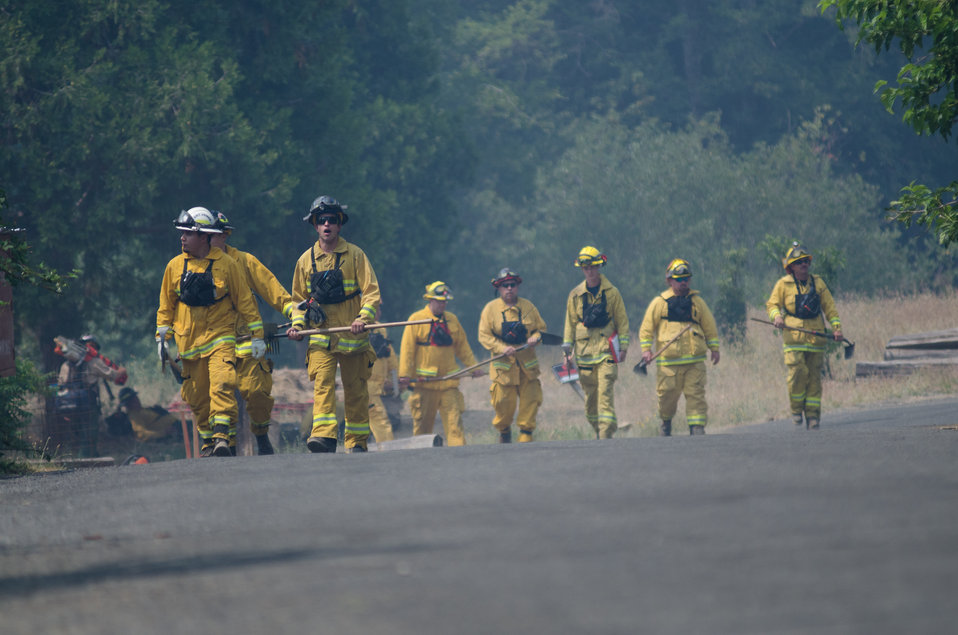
Fire fighters specializing both structural and wildland firefighting from Tahoe National Forest, Mt. Shasta-Trinity National Forest, South Yreka Fire Department, Dunsmuir-Castella Fire Department and others, have been called to the Salmon River Complex Fire, and conduct their structure-by-structure assessment of the urban intermix environment, at Sawyers Bar, CA in the Klamath National Forest, Tuesday, Aug. 6, 2013. The firefighters advise resident about fire prevention measures they are doing on their own as well as other measures they could take to prepare for fire. Actions such as moving away firewood, cutting and clearing plants next to their structures, and using garden hoses to soak structures and grounds all help in the event the main fire comes into their town.
There are two types structure environments in the realm of wildland firefighting.
This urban intermix structural protection environment is generally the more challenging, where structures have been built within a wildland area, isolated to some degree from other structures, but with no separation from wildland fuels (trees, brush and grass). This requires each structure to be assessed on a case-by-case basis. Fire protection measures will be tailored to each situation; defending these structures require a more complex solution, more firefighters, equipment and resources per structure.